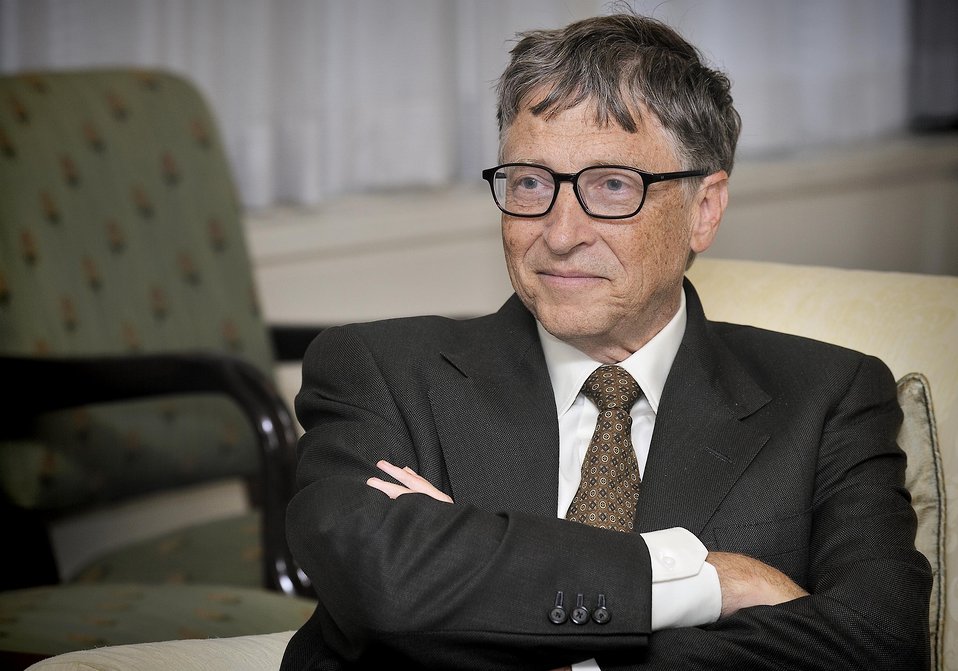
Ken Shipp/DOE Photo

William (Bill) H. Gates, founder, technology advisor of Microsoft Corporation visits The Department of Energy on October 8, 2013.